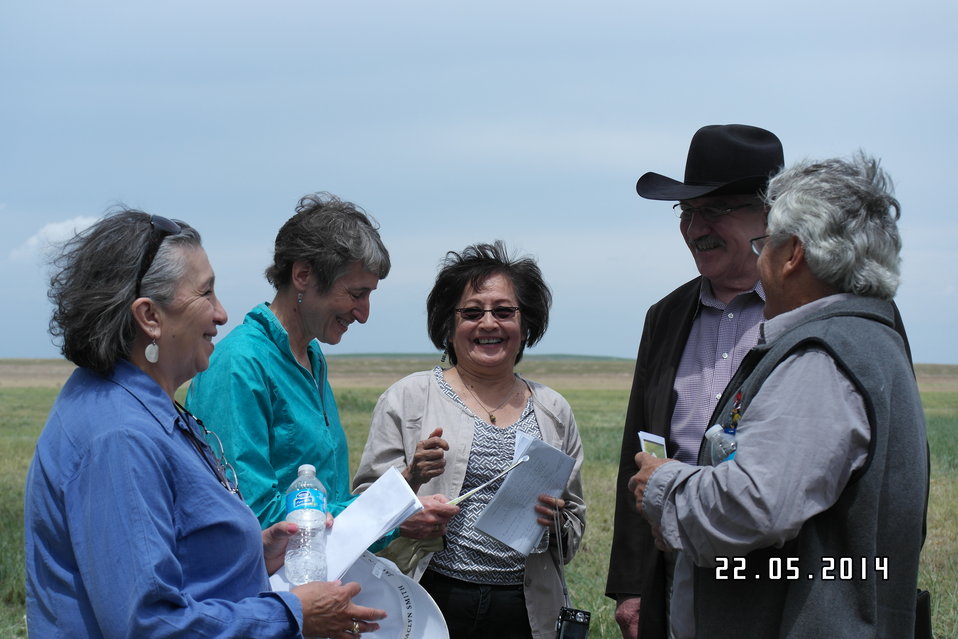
Native American Fish and Wildlife Society Meet with Interior Secretary Sally Jewell

Interior Secretary Sally Jewell helps local youth conservation groups plant cottonwood trees at Rocky Mountain Arsenal National Wildlife Refuge.